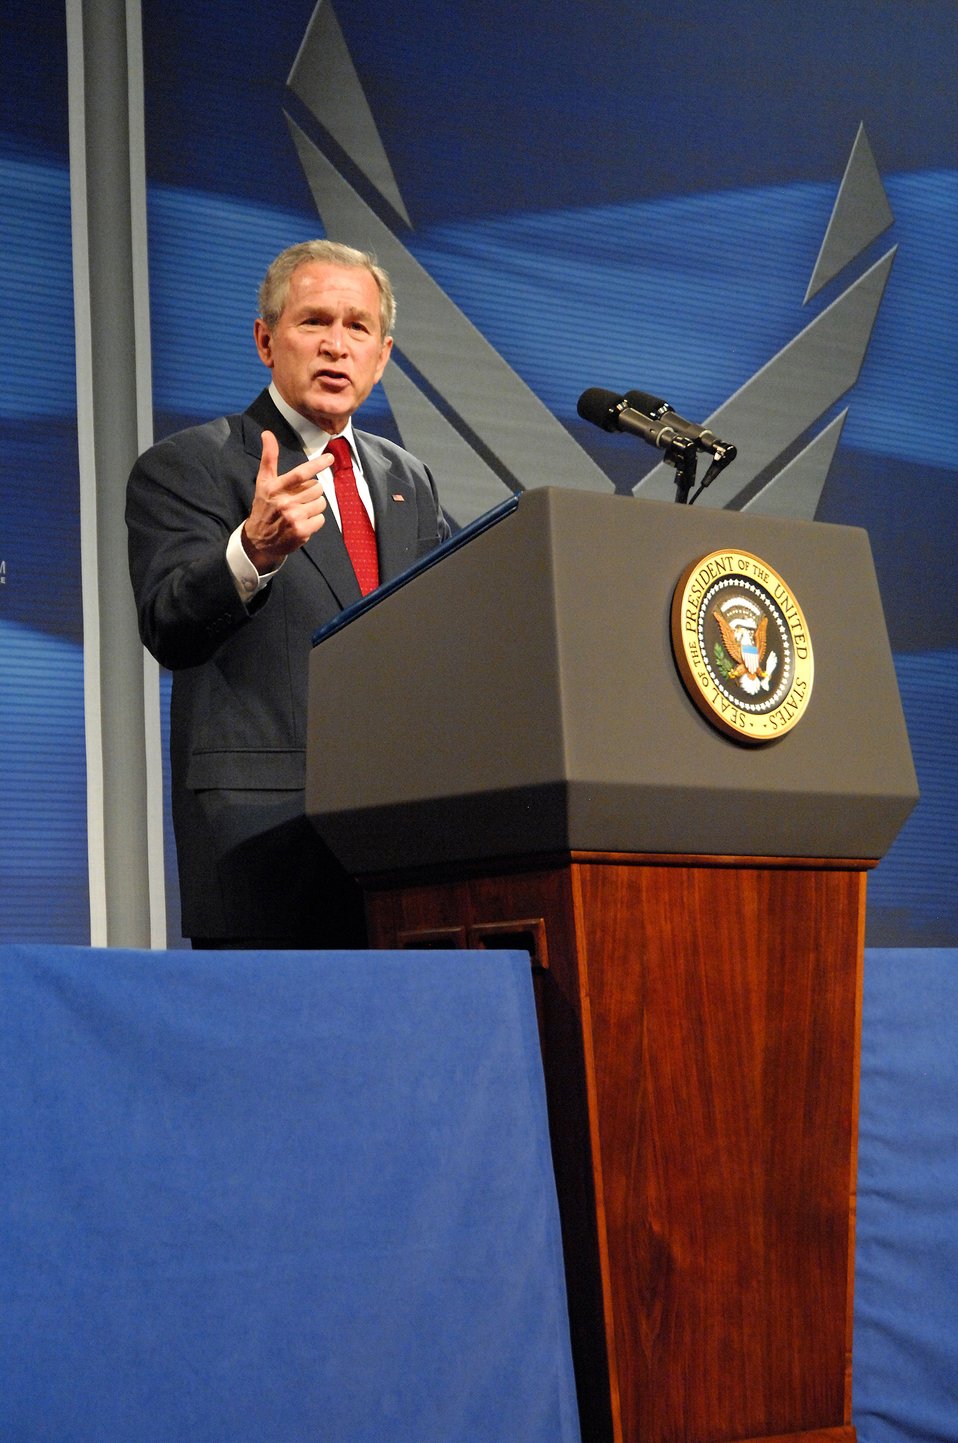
President Bush thanks Airmen, outlines importance of 'staying the course' in Iraq

President George W. Bush discusses the war on terrorism with about 1,100 attendees at the National Museum of the U.S. Air Force March 27. The president landed at nearby Wright-Patterson Air Force Base, Ohio, and traveled to the museum, where he spoke for about 40 minutes. President Bush thanked Airmen for their role in the fight against terrorism and outlined the need for continued support to Iraq.